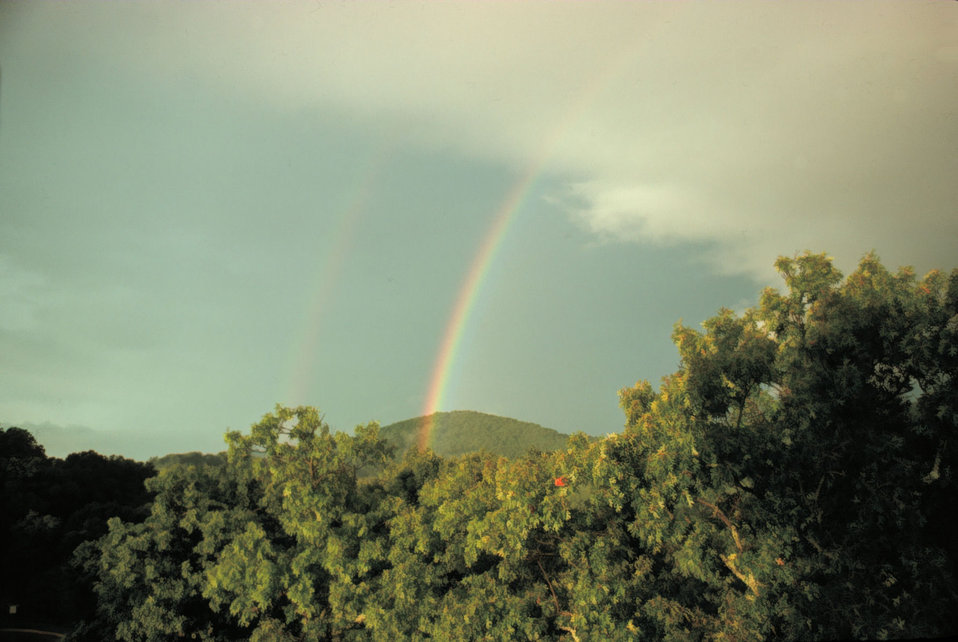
A primary and secondary rainbow - note reversal of spectrum Reversal caused by second bow being produced by 2 internal reflections